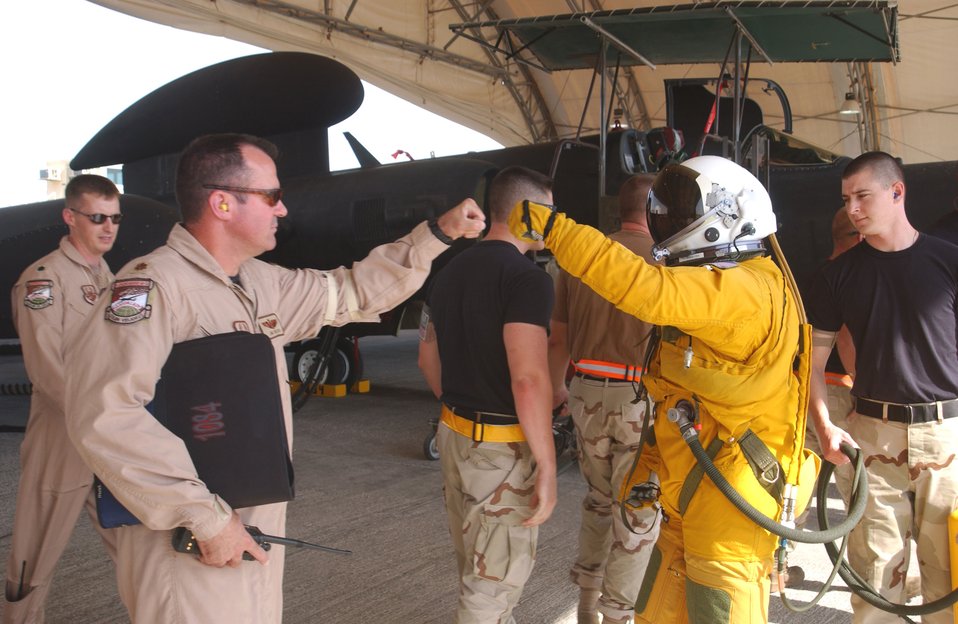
Flying high

Maj. Jim Crever (left), 99th Expeditionary Reconnaissance Squadron, pounds the fist of Capt. Karl Frederick just before his mission Oct. 24 in a U-2 Dragonlady. Maintenance Airmen at this deployed location prepare the high-flying aircraft for the flight. The Airmen are part of the vital intelligence, surveillance and reconnaissance mission for Operations Enduring Freedom and Iraqi Freedom in Southwest Asia.